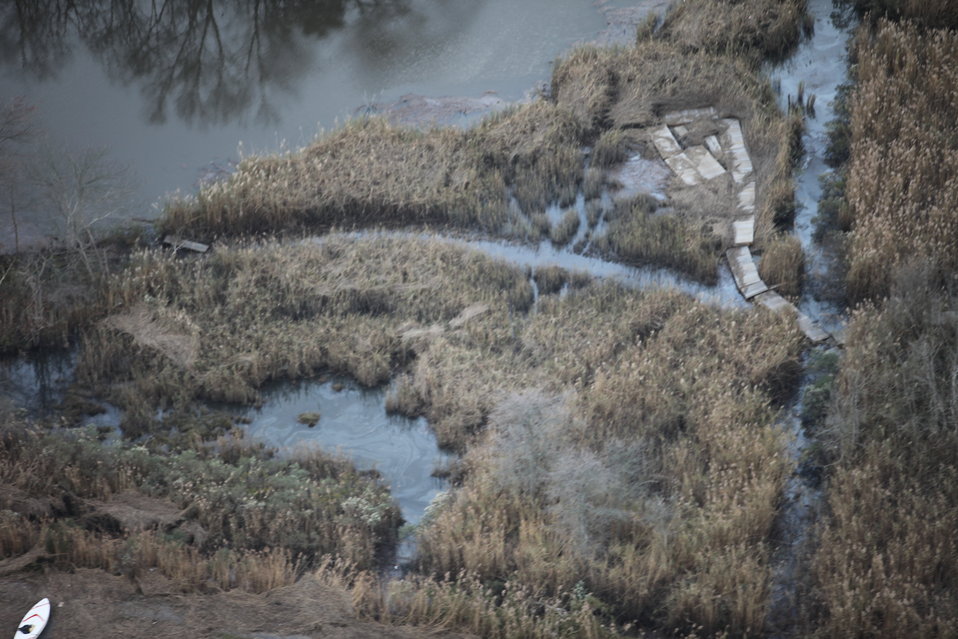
Trail damage at Target Rock National Wildlife Refuge (NY)

Trail damage in the aftermath of storm Sandy at the Target Rock National Wildlife Refuge on Long Island, NY.